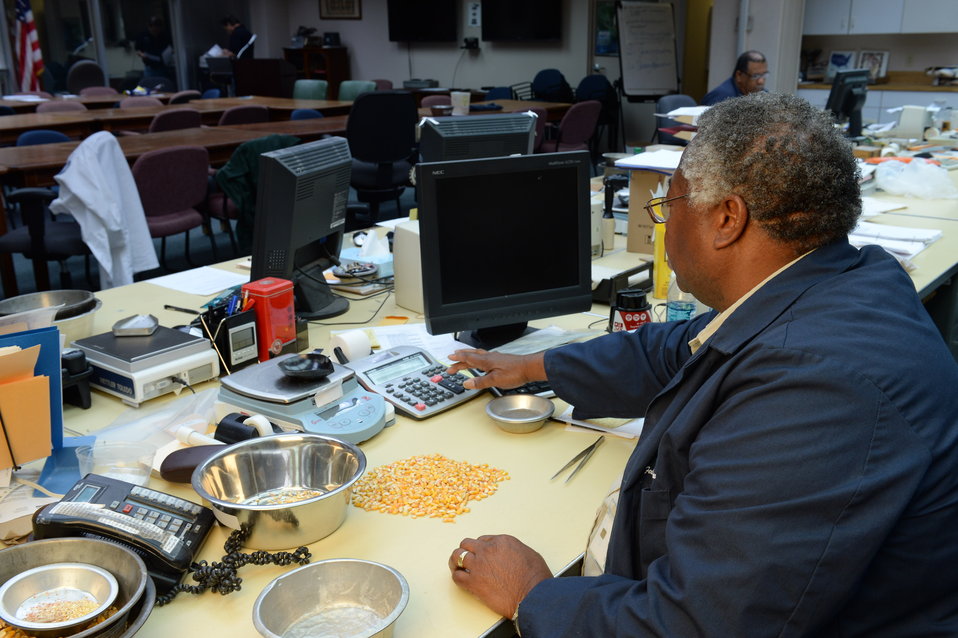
A U.S. Department of Agriculture (USDA) Grain Inspection, Packers and Stockyards Administration (GIPSA) Federal Grain Inspection Service (FGIS) scientist tests corn at the FGIS inspection laboratory in New Orleans, LA on Monday, Nov. 18, 2013.